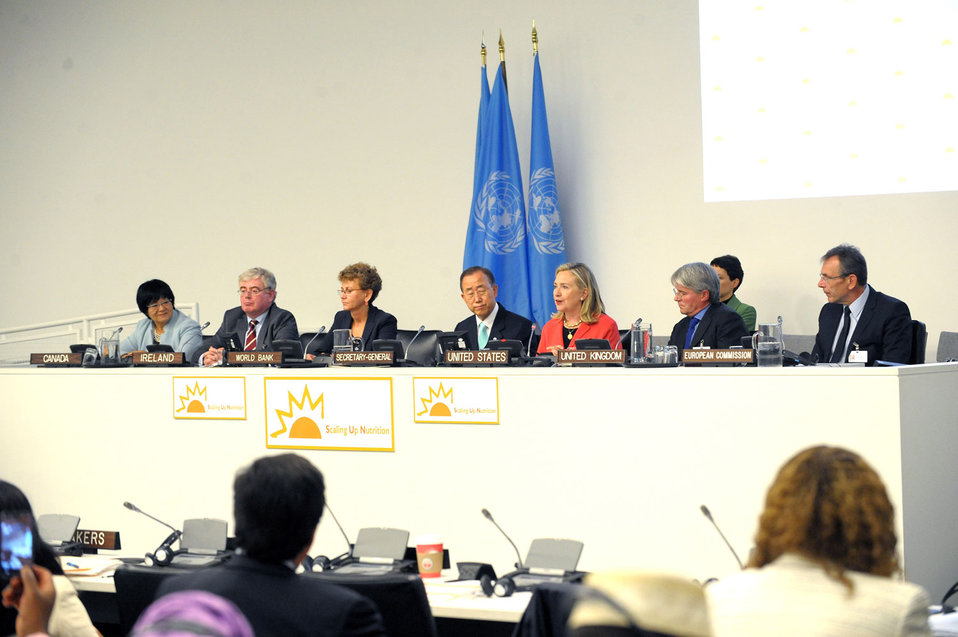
Secretary Clinton Participates in the UN High-Level Meeting on Nutrition

U.S. Secretary of State Hillary Rodham Clinton participates in the UN High-Level Meeting on Nutrition at the United Nations in New York, New York, on September 20, 2011.